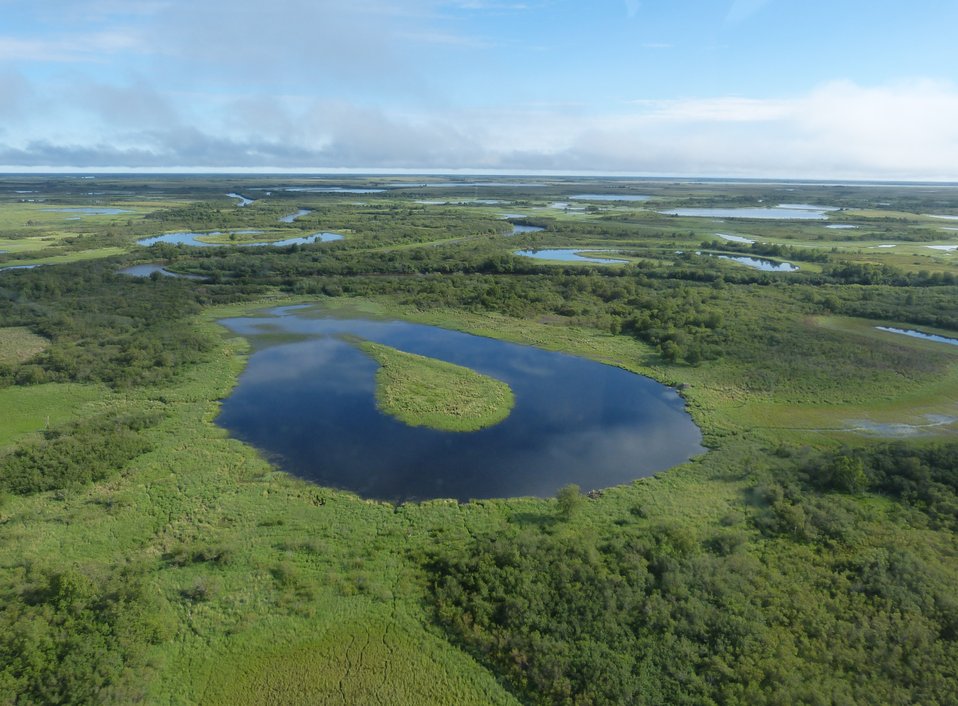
Yukon Delta NWR Wetlands

Boreal wetlands, Yukon Delta National Wildlife Refuge

Photo by: Kristine Sowl,
USFWS, Yukon Delta NWR,
July 10, 2013